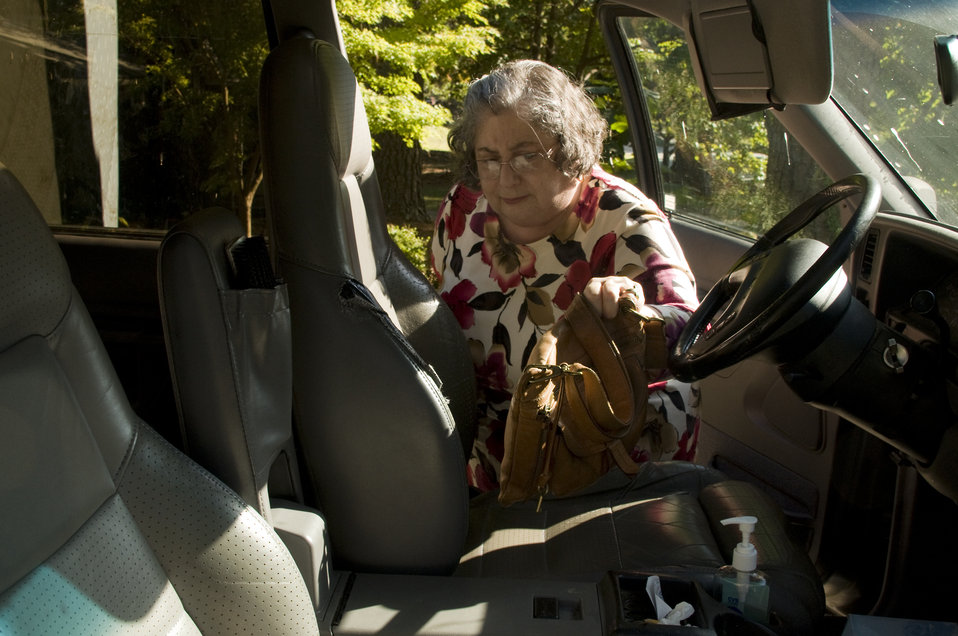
After having placed her luggage in the back seat area, this rheumatoid arthritis patient had set her handbag on the front seat prior to entering her vehicle. She was not letting her painful condition prevent her from carrying on with her daily activities.